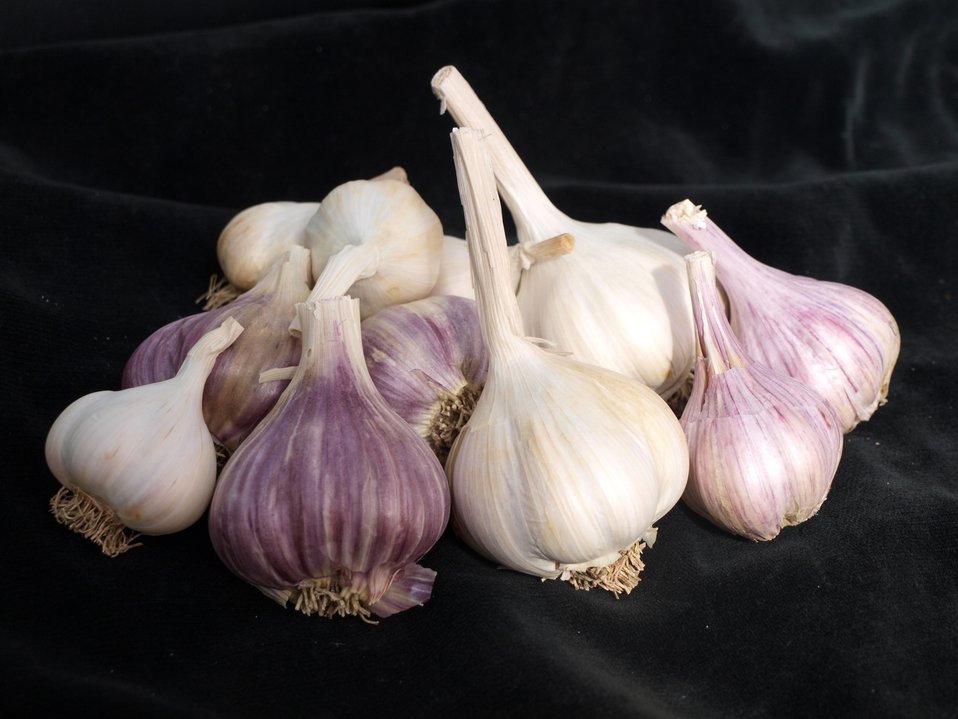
garlic

“This group of diverse garlic germplasm represents all the types that might be found at a farmer’s market.